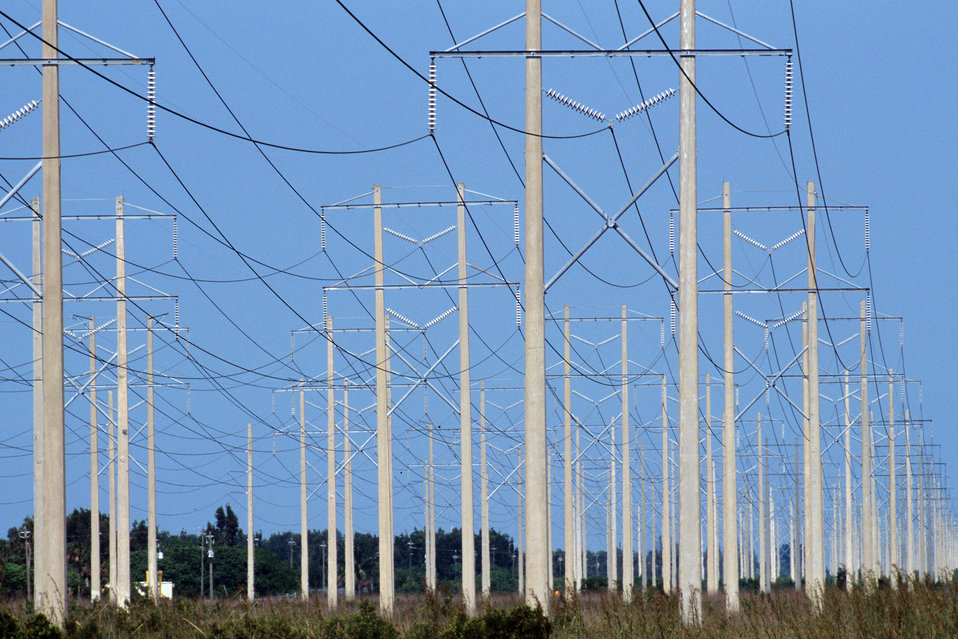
Powerlines line fill a field in central Florida in May 1995.